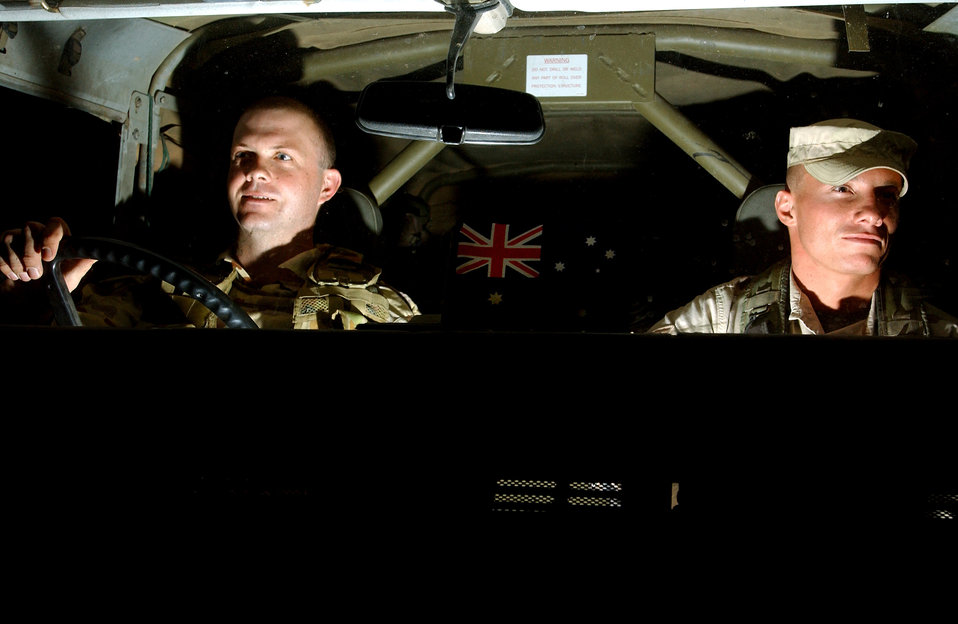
Defending the base

BAGHDAD INTERNATIONAL AIRPORT, Iraq -- Sgt. Nathan Hogg (left) and Senior Airman Sheridan Conklin conduct a night patrol here looking for any suspicious activity. Hogg is a member of the Royal Australian Air Force, and Conklin is assigned to the 447th Expeditionary Security Forces Squadron. Conklin is deployed here from the 9th Security Forces Squadron at Beale Air Force Base, Calif.